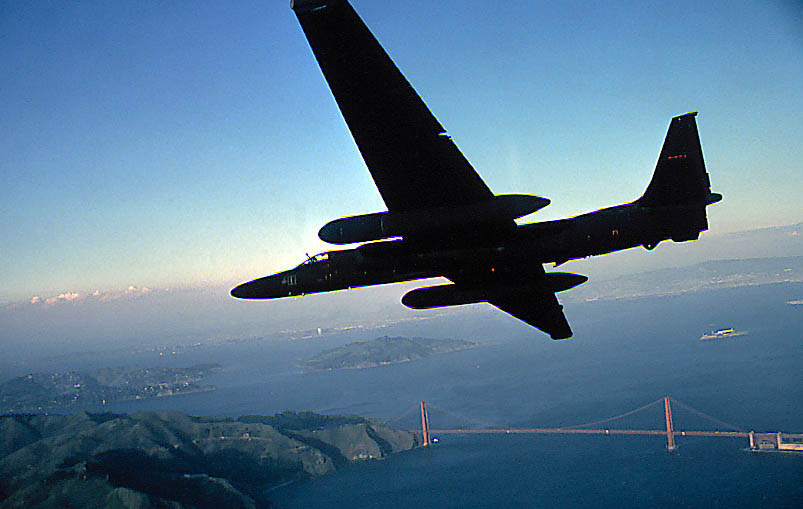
U-2

FILE PHOTO -- The U-2 is a single-seat, single-engine, high-altitude, reconnaissance aircraft. Long, wide, straight wings give the U-2 glider-like characteristics. It can carry a variety of sensors and cameras, is an extremely reliable reconnaissance aircraft, and enjoys a high mission completion rate. Because of its high altitude mission, the pilot must wear a full pressure suit. The U-2 is capable of collecting multi-sensor photo, electro-optic, infrared and radar imagery, as well as performing other types of reconnaissance functions. However, the aircraft can be a difficult aircraft to fly due to its unusual landing characteristics.